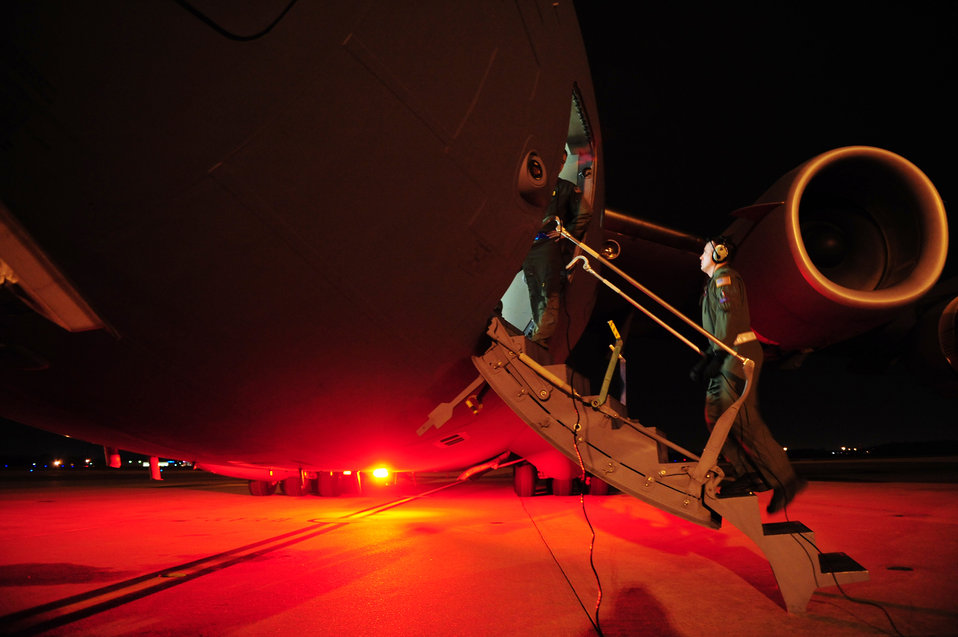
Relief on the way

At Charleston Air Force Base, S.C., 1st Lt. David Redwine boards a C-17 Globemaster III before launching an air delivery mission in support of Operation Unified Response Jan. 20, 2010. Lieutenant Redwing is a pilot assigned to the 15th Airlift Squadron at Charleston AFB.